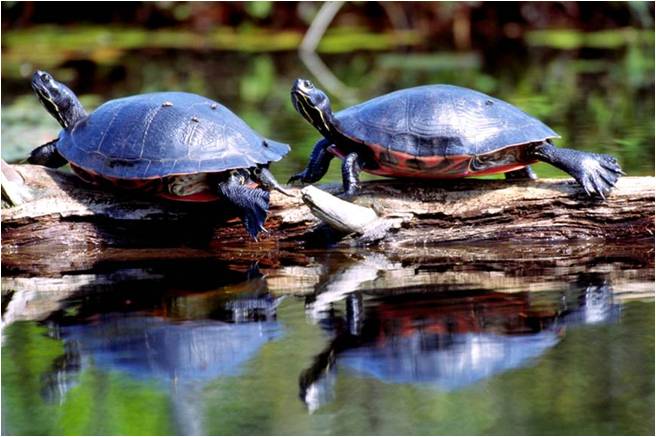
Basking Northern Red-Belllied Cooters

Two adult northern red-bellied cooters basking on a log at Federal Pond in Plymouth, MA.